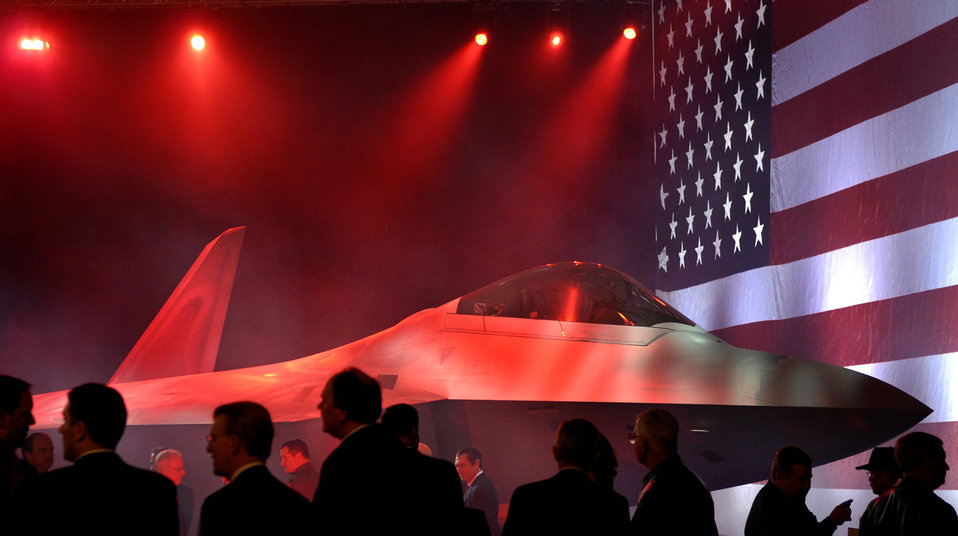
First F-22 bound for Pacific unveiled

Representatives from the Air Force and Lockheed Martin gathered to see the roll-out of Pacific Air Forces' first F-22 Raptor Feb 12 at Marietta, Ga. This F-22 is the first of several that will be assigned to PACAF at Elmendorf Air Force Base, Alaska. The F-22 performs both air-to-air and air-to-ground missions allowing full realization of operational concepts vital to the 21st century Air Force.